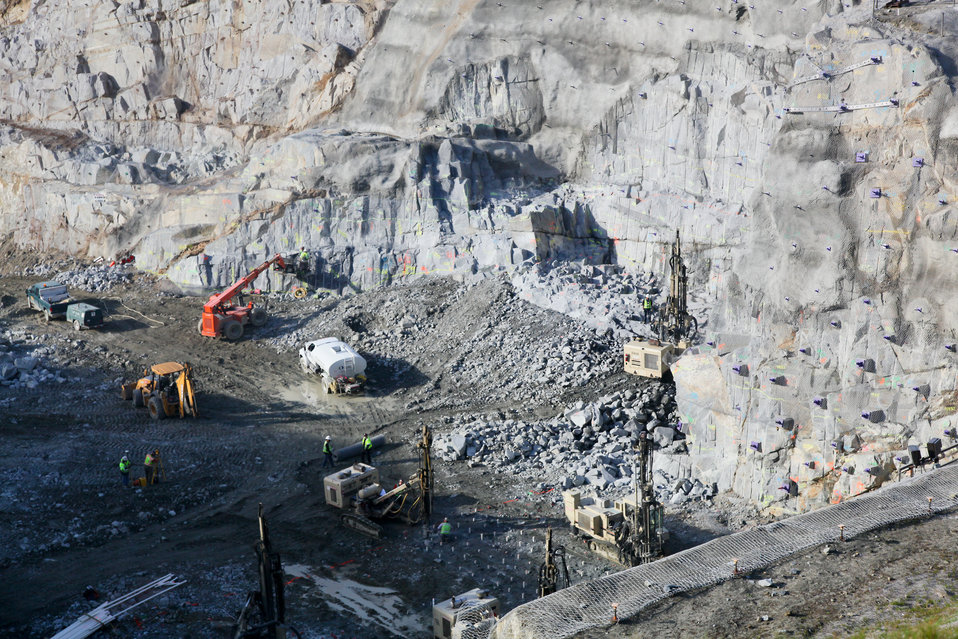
Concrete mixing equipment moves into the Folsom Dam auxiliary spillway

Workers complete the first stage of installing concrete mixing equipment for the new Folsom Dam auxiliary spillway in Folsom, Calif., Jan. 25, 2012. Paving is scheduled to begin in May, said U.S. Army Corps of Engineers Sacramento District project engineer Larry Smith. The spillway will allow Folsom Dam to release water sooner and more safely. The project is part of the Folsom Dam Joint Federal Project, a joint effort of the U.S. Army Corps of Engineers Sacramento District, the U.S. Bureau of Reclamation, the Central Valley Flood Protection Board and the Sacramento Area Flood Control Agency to improve the safety of the dam and reduce flood risk for the greater Sacramento area.